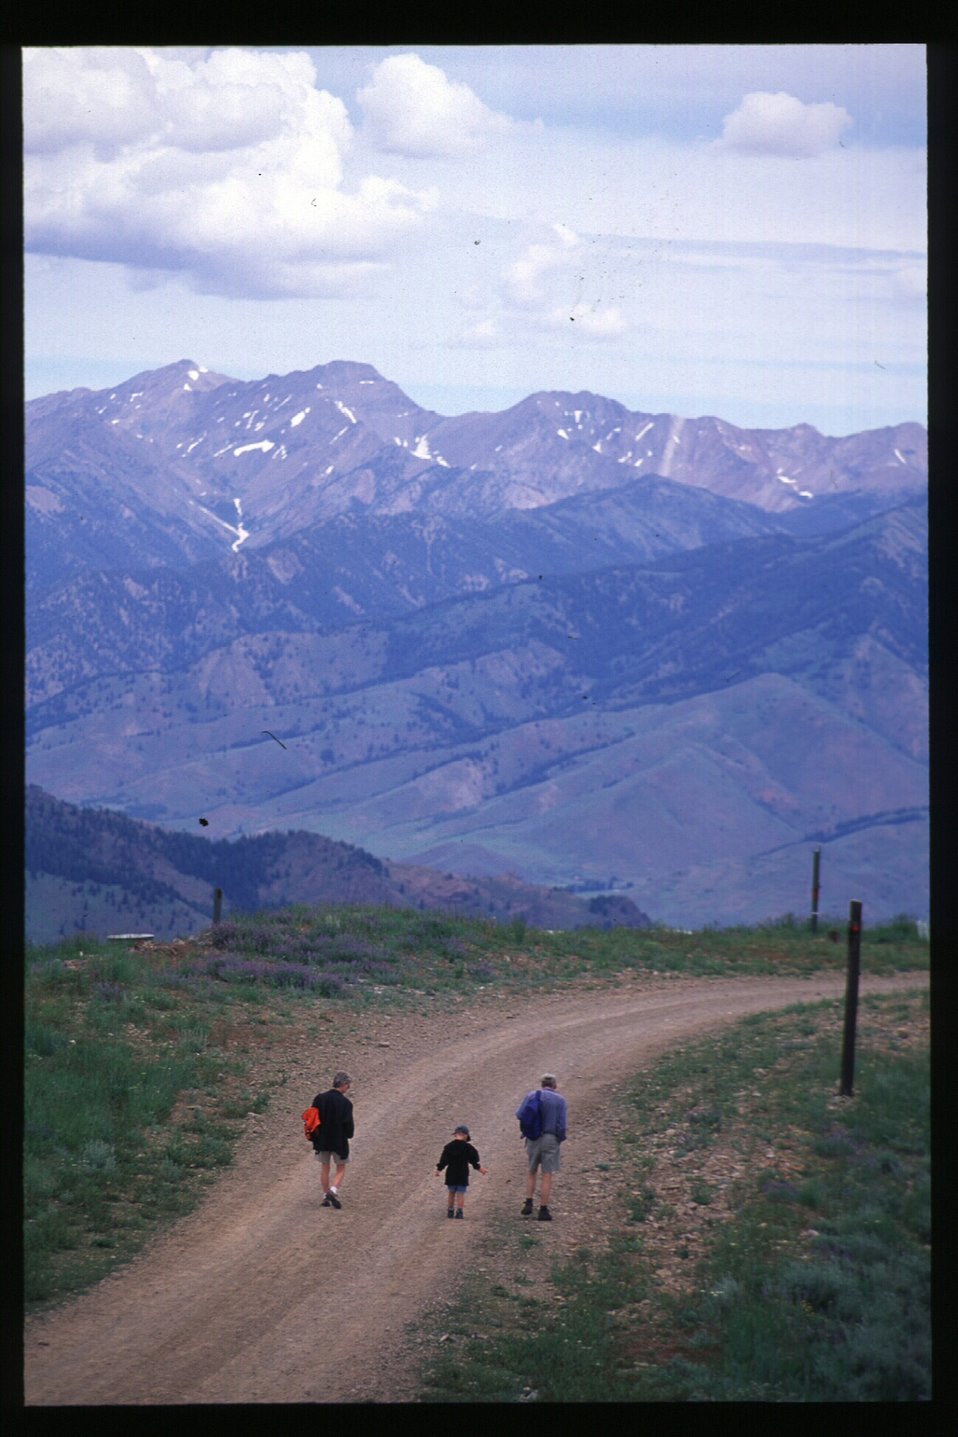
Recreation Scenic Biker Shoshone Field Office USRD Upper Snake River District Bald Mountain Trail Summit